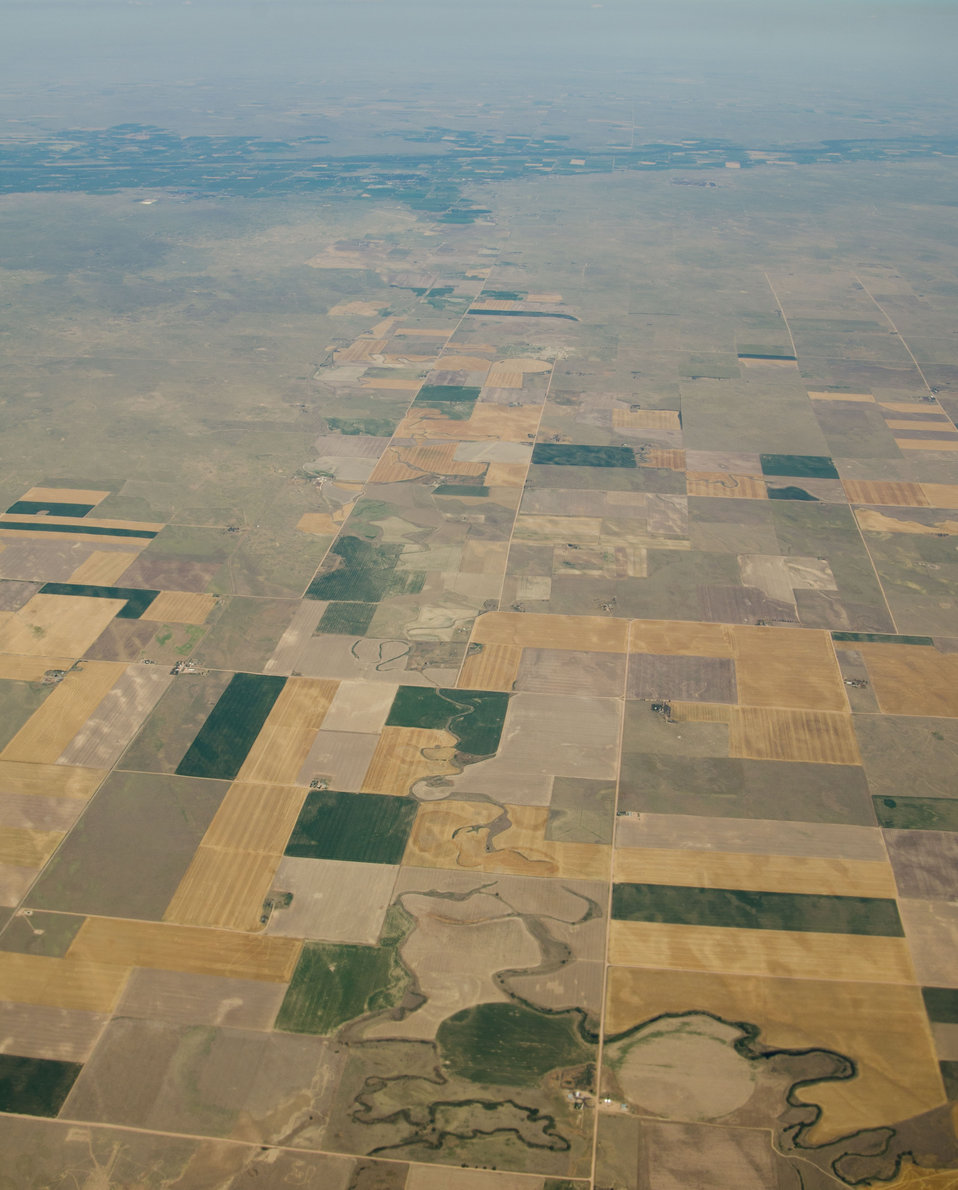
Aerial views of drought affected Colorado farm lands, 16 miles SE of Ft. Morgan, Colorado on Saturday, July 21, 2012. Green areas are irrigated, the yellow areas are dryland wheat crops.